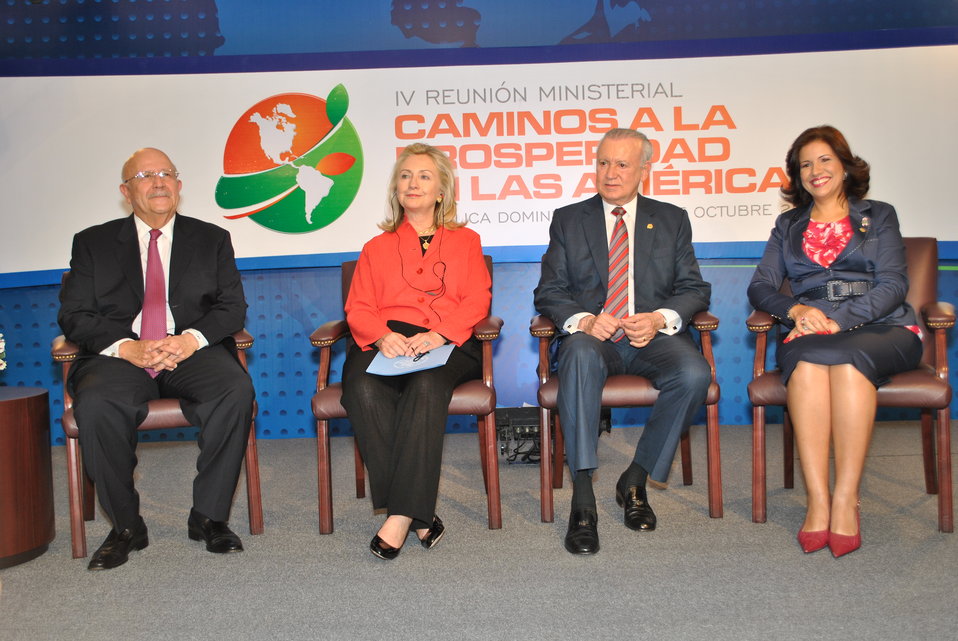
Secretary Clinton Participates in the Pathways Ministerial Opening

U.S. Secretary of State Hillary Rodham Clinton participates in the Pathways Ministerial Opening in Santo Domingo, Dominican Republic, on October 5, 2011. Pictured in this photo from left to right are: Dominican Republic Foreign Affairs Minister Carlos Morales Troncoso; Secretary Clinton; Dominican Vice-President Rafael Alburquerque; and Dominican Republic First Lady, Margarita Cedeño de Fernandez.